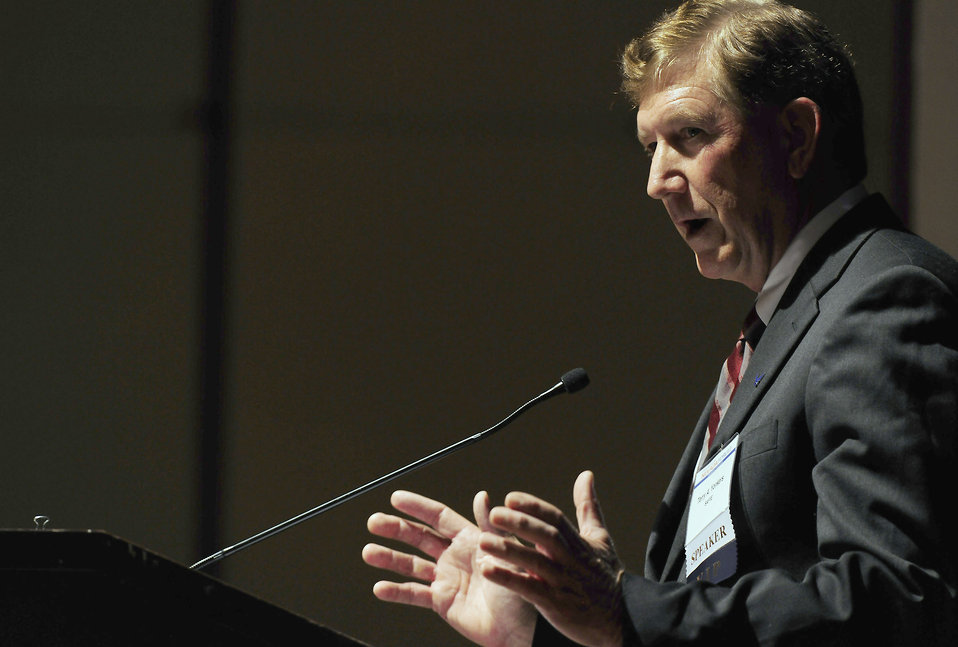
Nevada Forum

Terry Yonkers, the assistant secretary of the Air Force for installations, environment and logistics, gives closing remarks to close out the first day of the Nevada Energy Forum Aug. 24, 2010, in Las Vegas. Mr. Yonkers summarized several points made by the day's speakers, including Undersecretary of the Air Force Erin C. Conaton, Nevada's Lieutenant Governor, Brian Krolicki, and Dr. Dorothy Robyn, the deputy undersecretary of Defense for installations and environment.